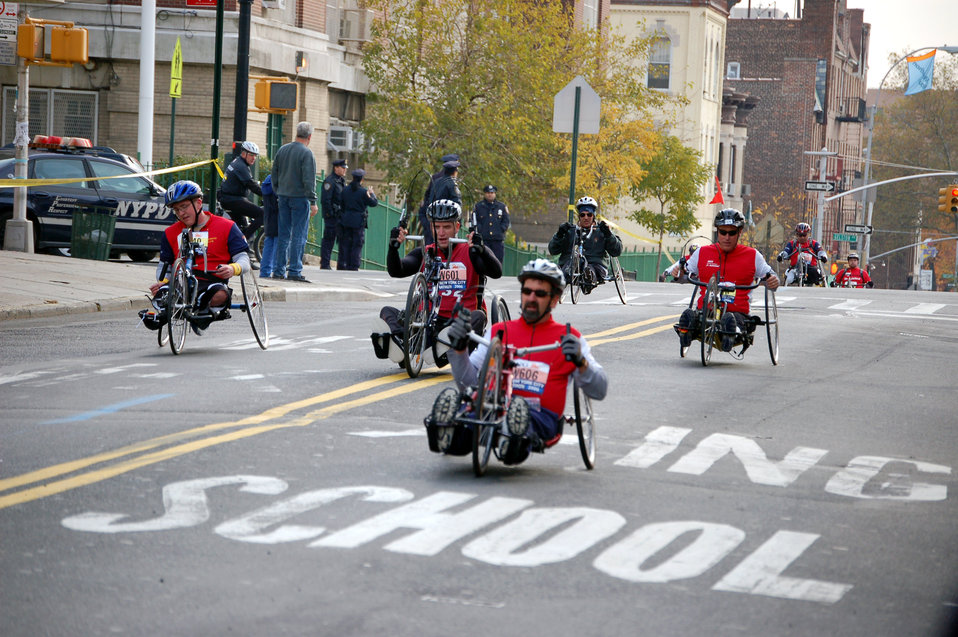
Achilles Freedom Team marathoners crest a hill near mile eight of the New York City Marathon Nov. 5. Nearly 50 disabled veterans ran the marathon as Achilles' 'wounded warriors'.